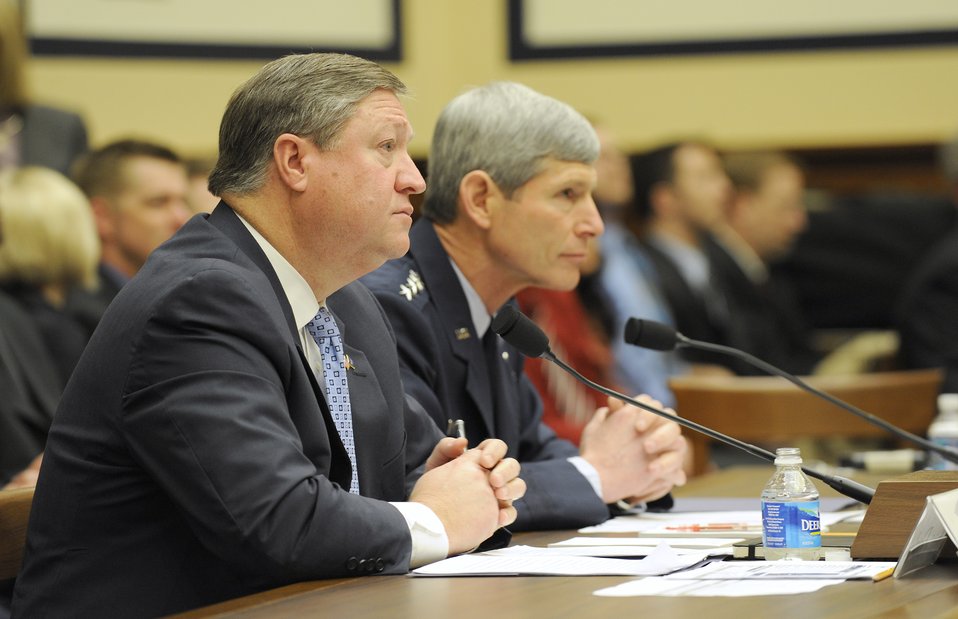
Chief of staff's testimony addresses 'Don't Ask, Don't Tell' repeal initiative

Secretary of the Air Force Michael Donley testifies before the House Armed Services Committee along with Air Force Chief of Staff Gen. Norton Schwartz Feb. 23, 2010, in the Rayburn House Office Building on Capitol Hill. The committee met to receive testimony on the fiscal 2011 Air Force budget request.